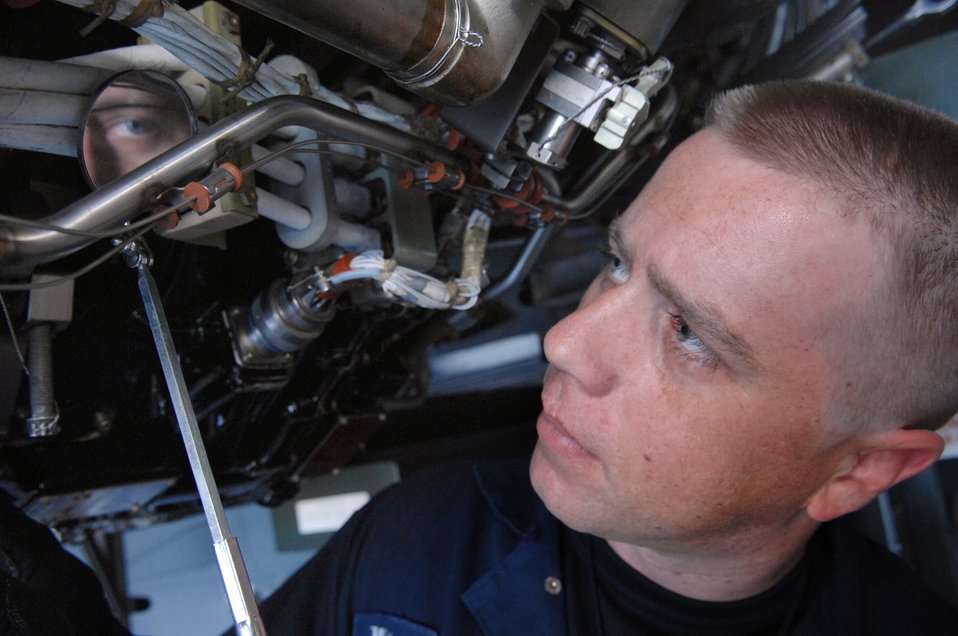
Taking a closer look

Staff Sgt. Troy Wilson uses a mirror to complete a follow-up inspection of a C-17 Globemaster III engine. Sergeant Wilson is with the 62nd Maintenance Squadron at McChord Air Force Base, Wash.